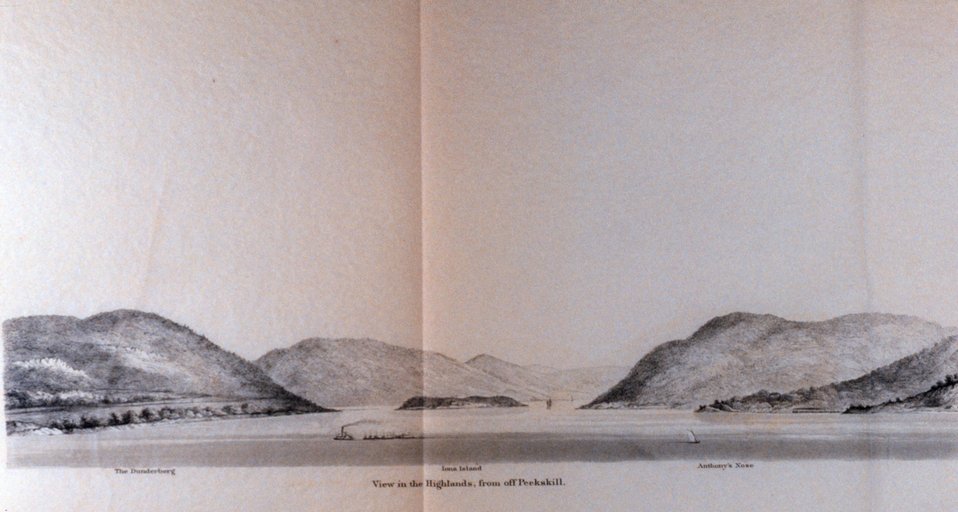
View of the Highlands from off Peekskill. On the Hudson River. In: Atlantic Local Coast Pilot Sub-Division 13 South Coast of Long Island New York Bay and Hudson River 1880. P. 600. Library Call Number VK981.A3 1879 Sub-13 2nd ed. 1880.